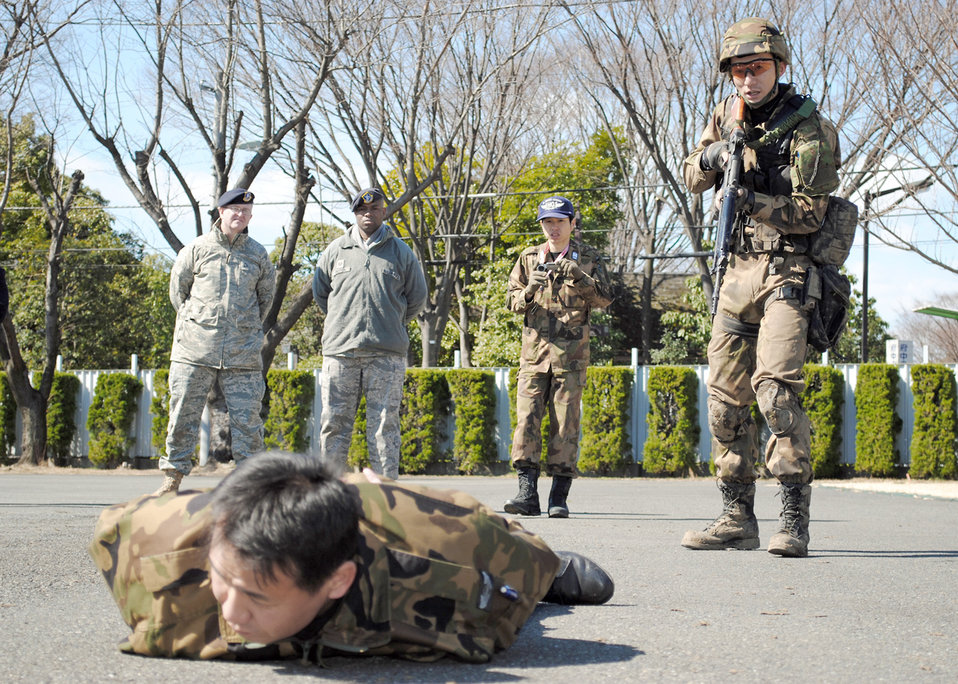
Airmen help prepare Japanese counterparts for new security role

Security guards from the Japan Air Self Defense Force practice searching a suspicious person during the vehicle challenge block of training March 4, 2011, at Yokota Air Base, Japan. Airmen from 5th Air Force and 374th SFS are helping JASDF transform its security guard training and operations into something more similar to U.S. Air Force security forces as JASDF prepares to stand up its new Base Defense Development and Training Squadron.